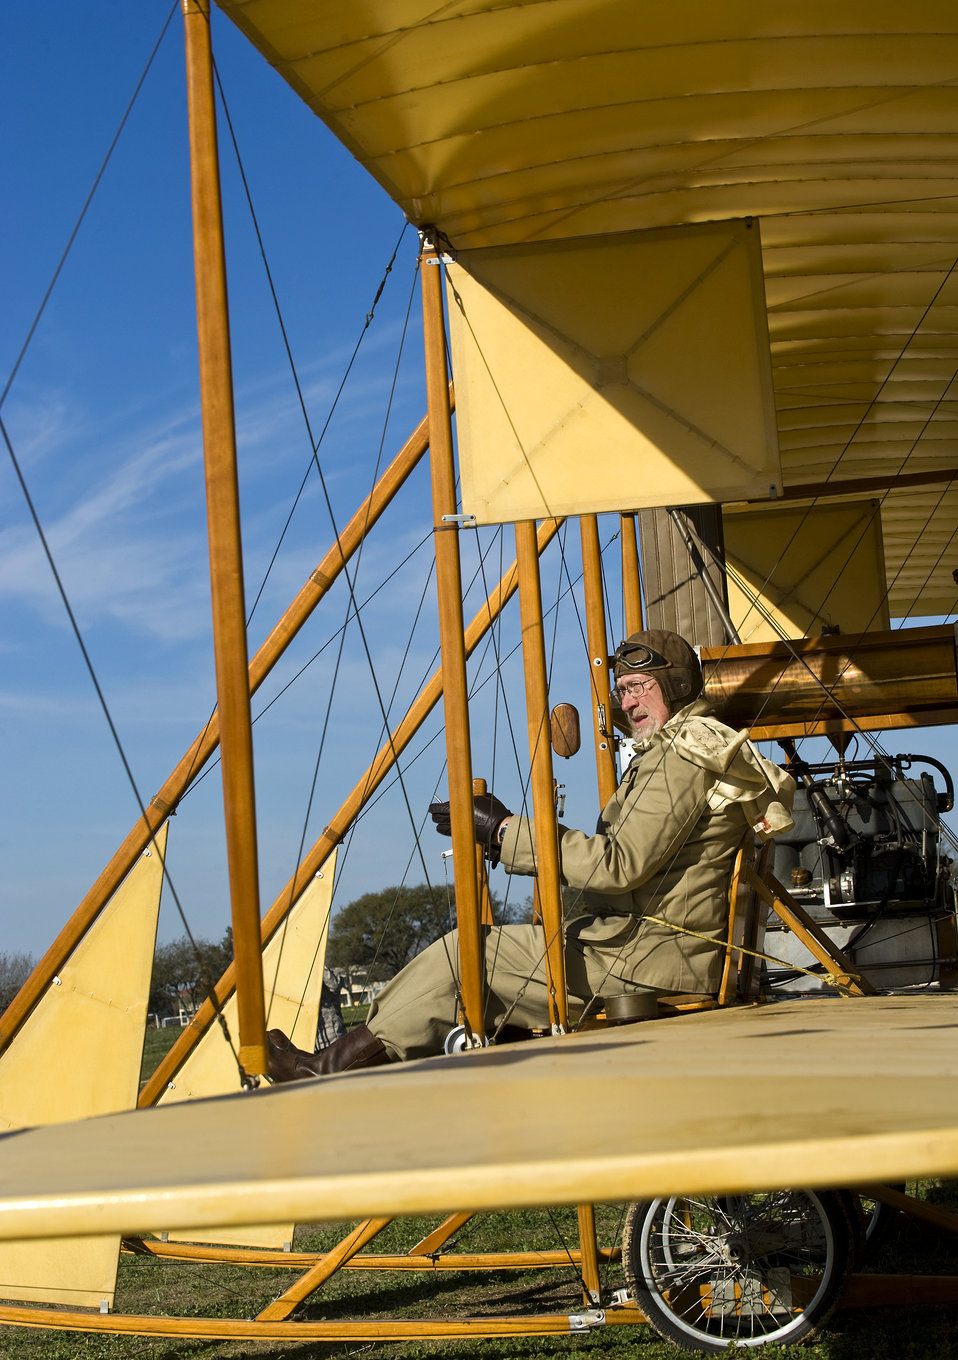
Military, civilians celebrate 100 years of military flight

Don Gum, Wright